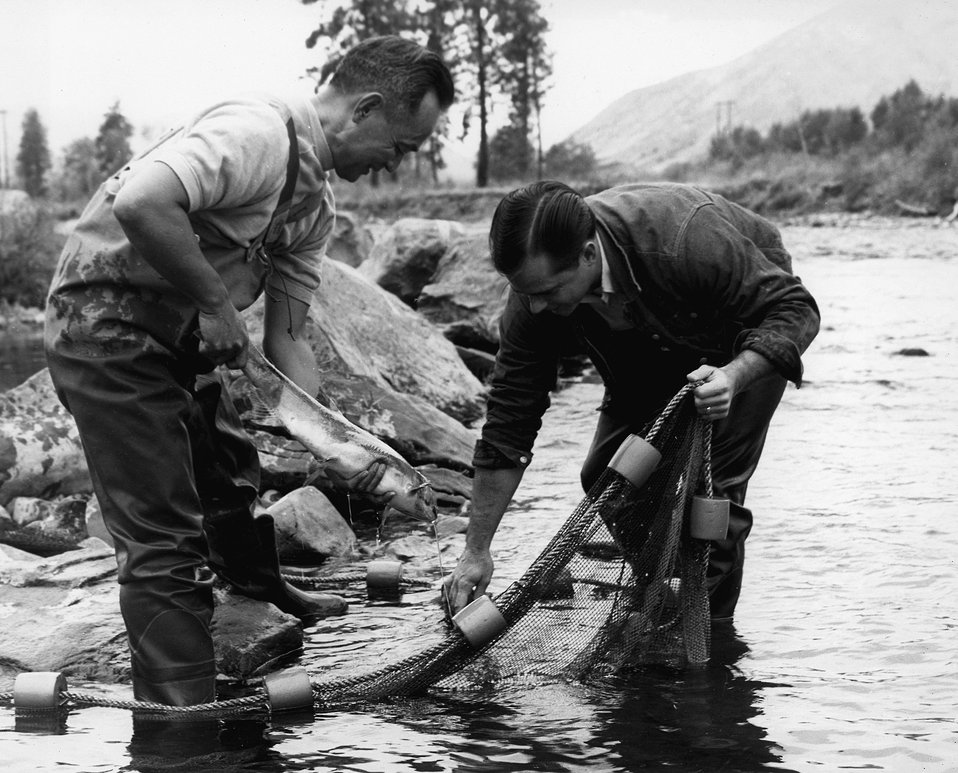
Biologists at the Energy Research & Development Administration's Pacific Northwest Laboratory, near Richland, Washington, have scored a major breakthrough in the fight against a disease known as columnar-is which infects large numbers of fish -- particularly salmon and steel head -- in dozens of North American rivers. c. 1970